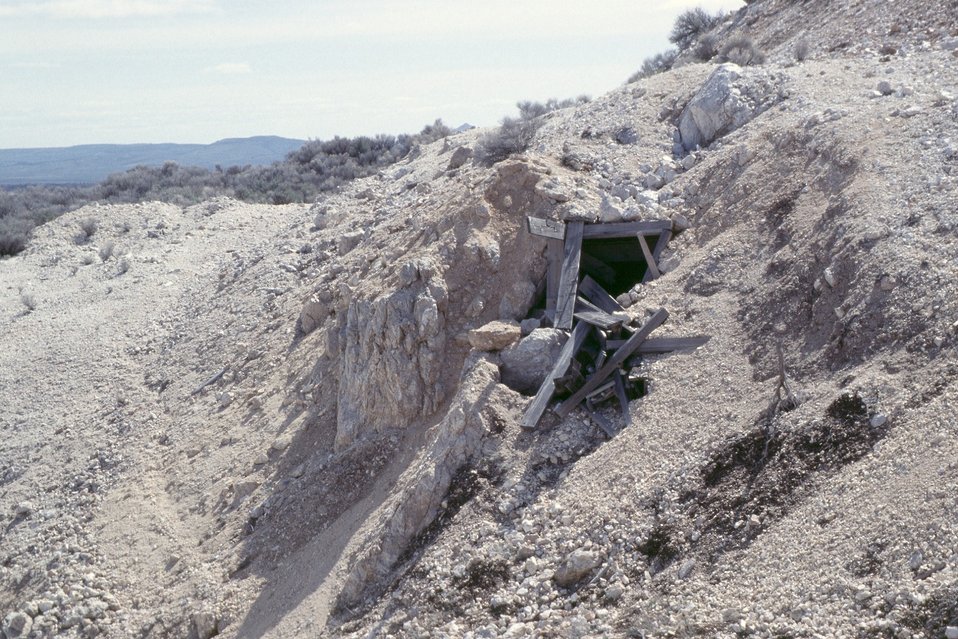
AML Glass Buttes, G3, Burns District. The short adit in the hillside is shored up by wooden supports. It was active in 1957. Note the crumbly nature of the rock that contained an ore-bearing vein.